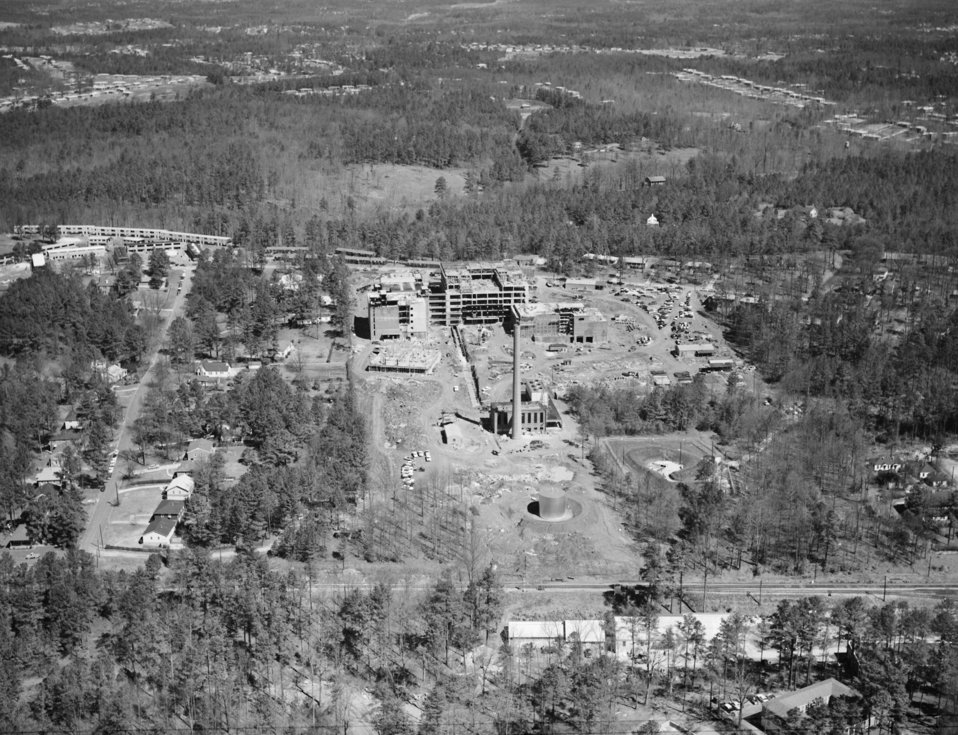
Aerial photograph (facing north) of the CDC, Clifton Road, Atlanta, GA. campus while under construction in 1959.